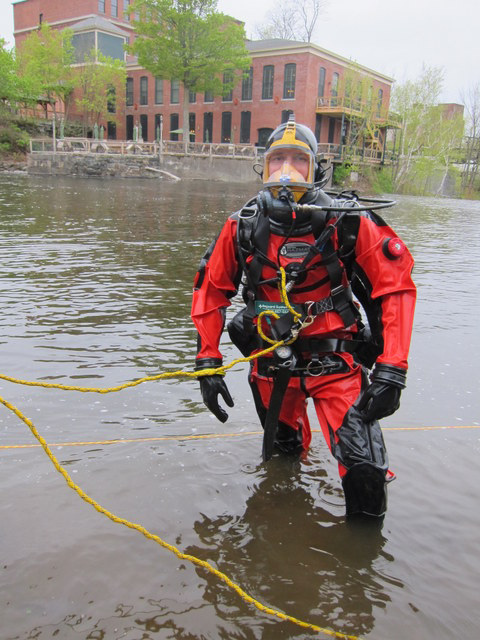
May 2012, Extra precautions in polluted water

This EPA diver is entering the water with extra safety precautions for the sampling effort.

Because of the polluted conditions, he is wearing a fully enclosed dry suit, dry hood, full face mask and dry gloves for protection. The dry suit, as you might guess from the name, is designed to keep the diver 100 percent dry with no exposure to contamination.

If at any point a diver in these conditions feels a leak, the dive is immediately stopped. This equipment can all be decontaminated and used again.

The diver can be decontaminated at the waters edge as he exits the hot zone (the water body). In most cases water is suitable to rinse off contamination, but a soap or surfactant may be required to remove residual oil from the equipment.